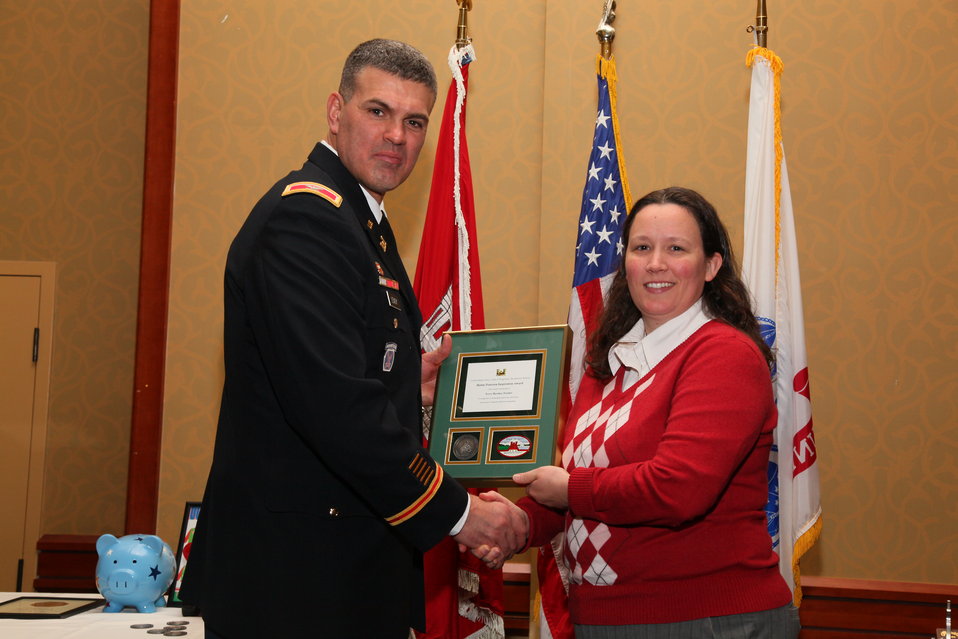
Sacramento District Holiday Party 2011